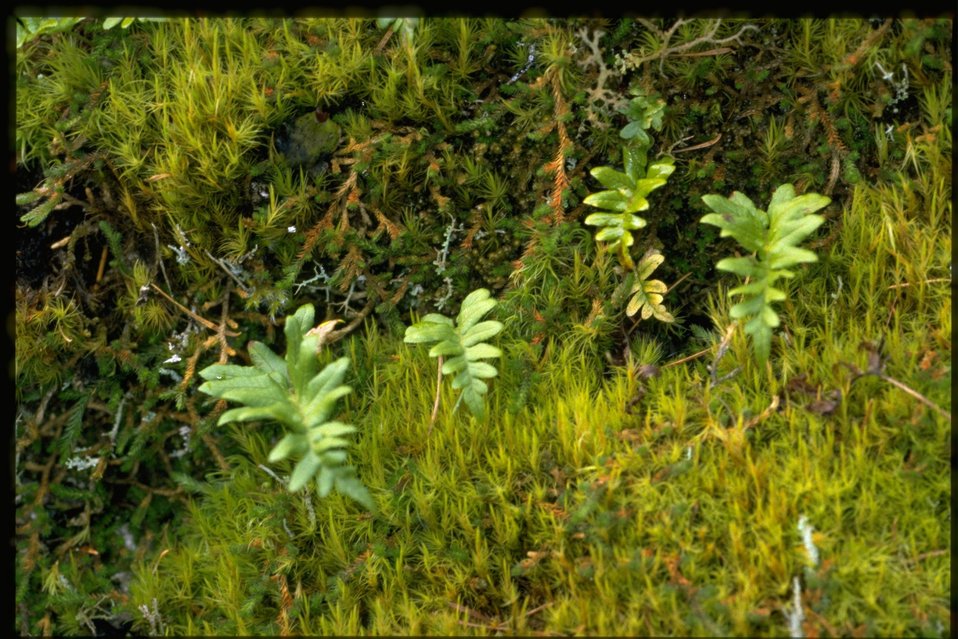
Polypodium glycyrrhiza.